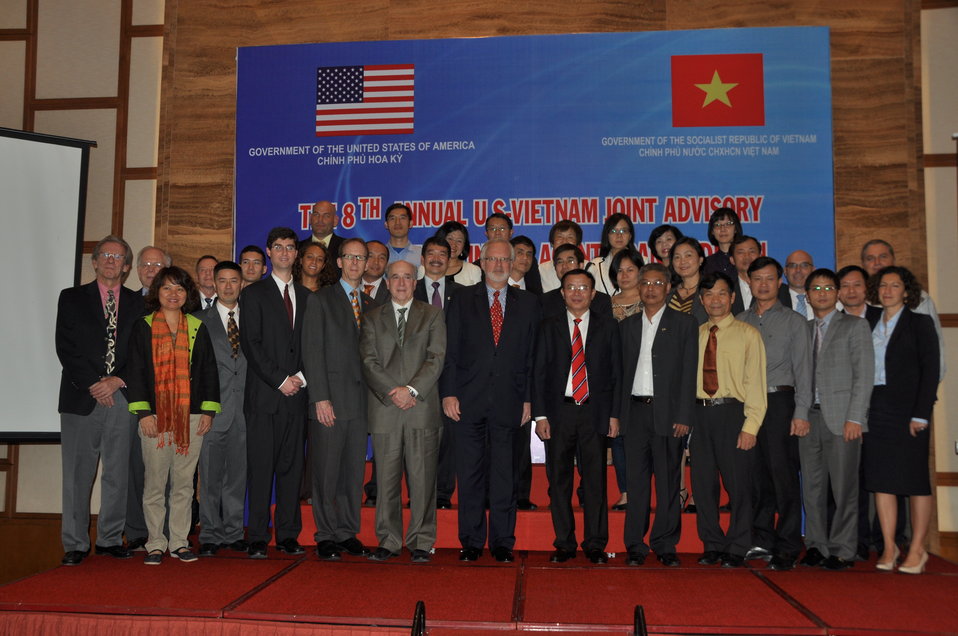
8th Annual JAC Participants

Danang, December 4, 2013.